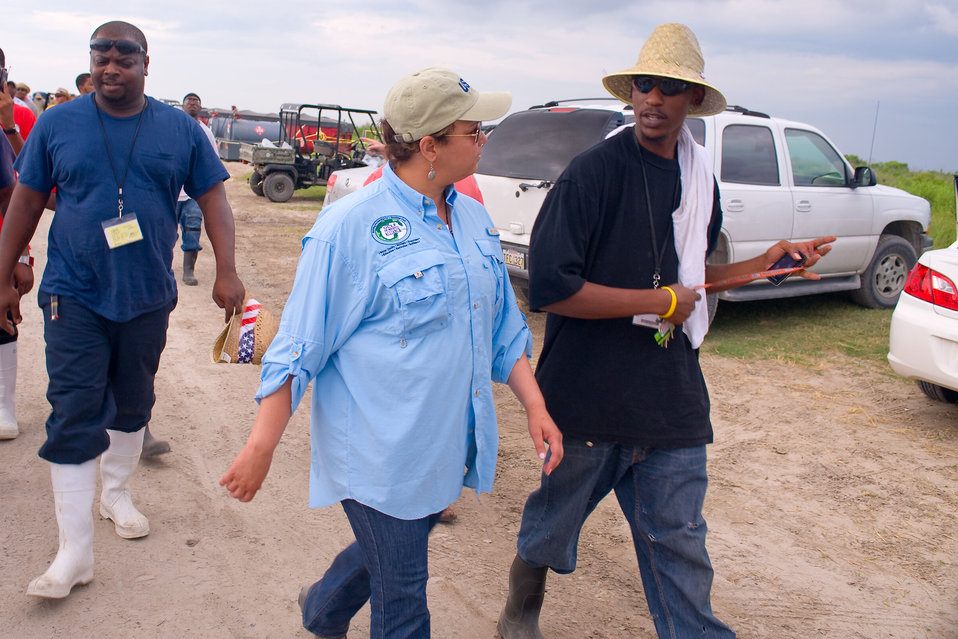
June 2, Getting first hand accounts from cleanup workers at Fourchon Beach, La

EPA Administrator Lisa Jackson walks and talks with beach cleanup workers. Fourchon Beach.